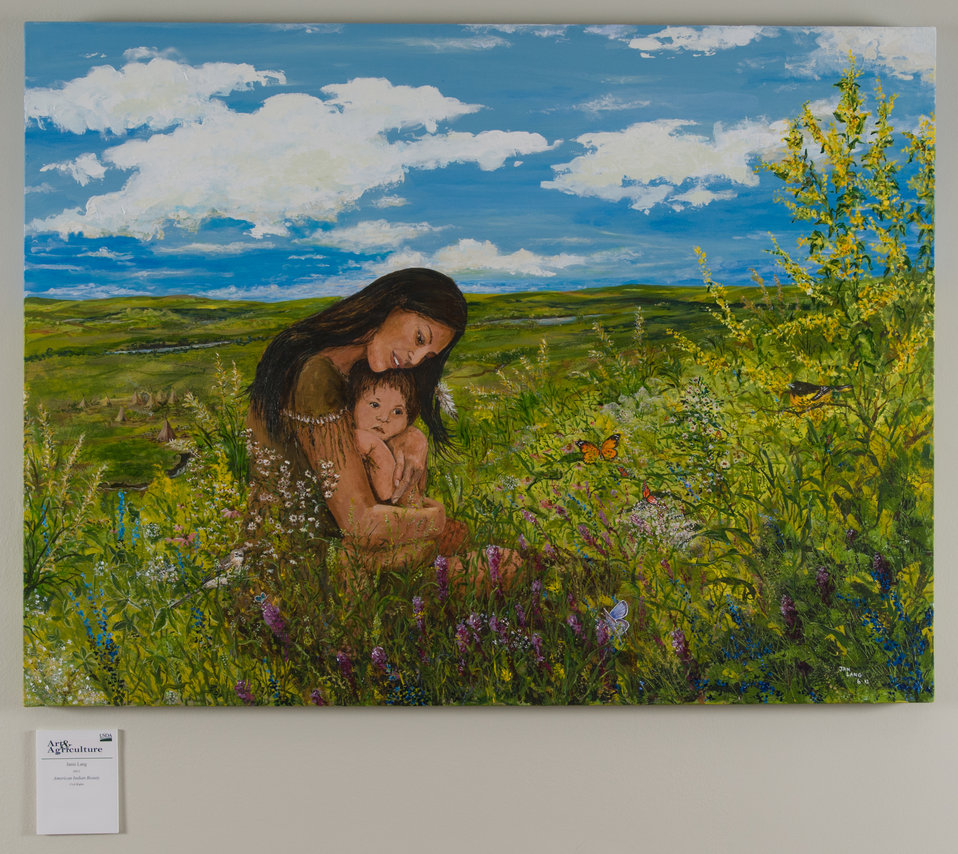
Online Viewer's Choice entries of the 2013 Art & Agriculture, Tuesday, July 9, 2013, in the South Building, Washington, D.C. Themes were expressed by employees from across the department and the contest was open to full-time and part-time USDA employees. Winning artwork will be displayed till the end of the year. U.S. Artistic expression is a creative outlet that is vital for an individual to grow and develop.